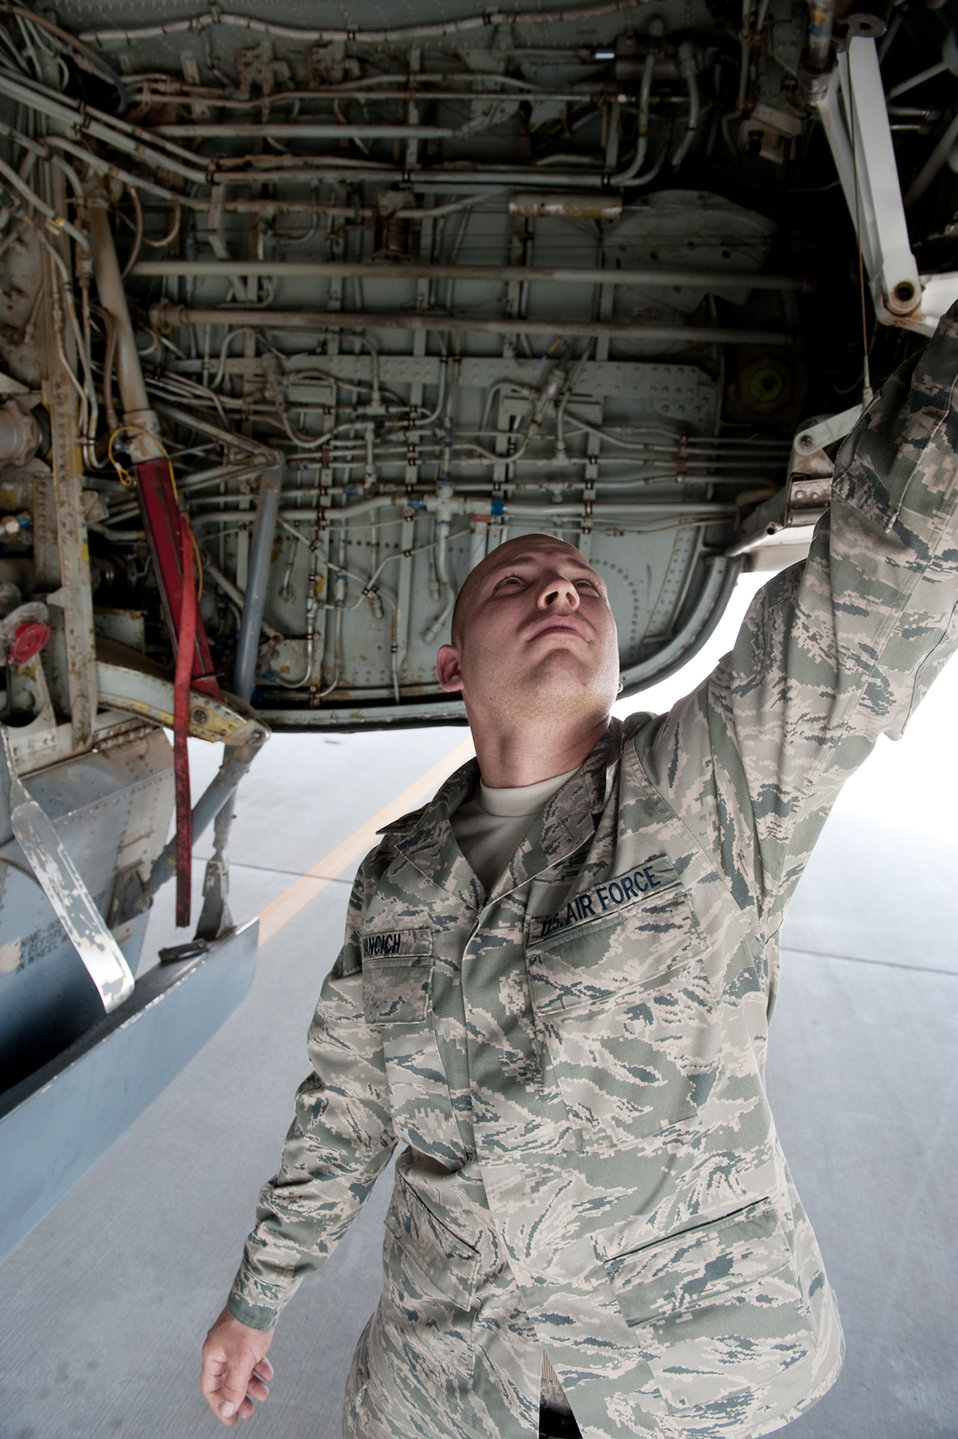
Teamwork keeps tankers flying

Staff Sgt. Marcus Yancich performs a preflight check to ensure a KC-135 Stratotanker is safe to fly Aug. 11 at an air base in Southwest Asia. The KC-135 provides aerial refueling support to Air Force, Navy and Marine Corps and allied nation aircraft. Sergeant Yancich is a 340th Aircraft Maintenance Unit crew chief. He is a native of New Orleans and is deployed from MacDill Air Force Base, Fla.